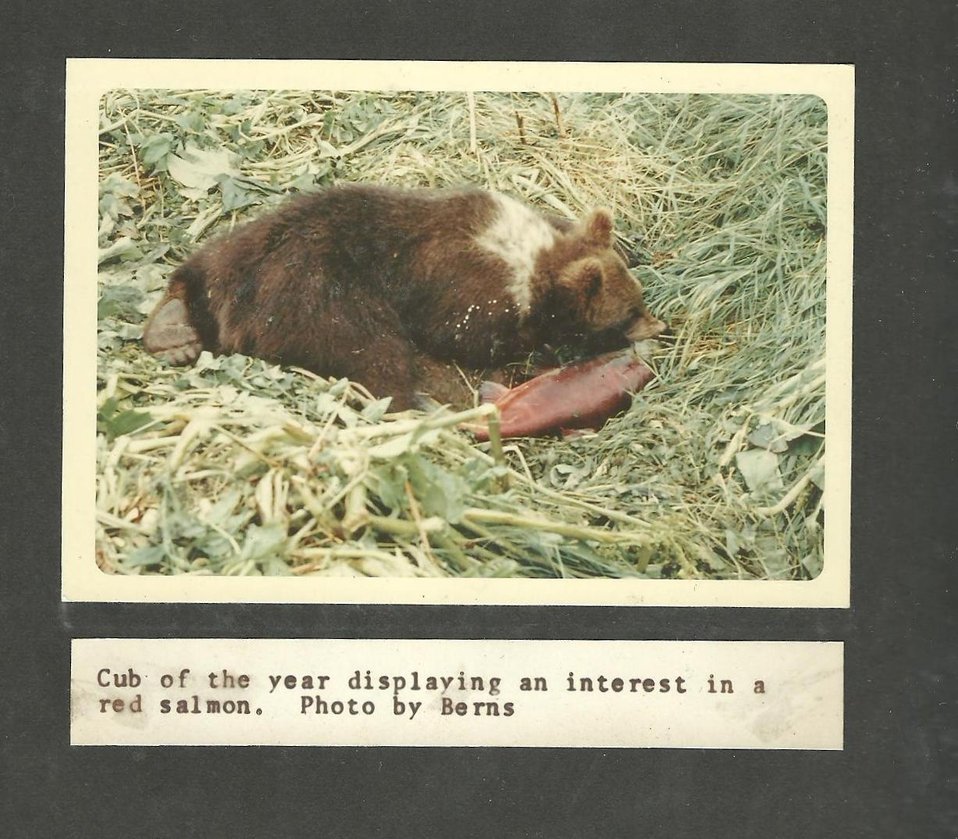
(1968) Cub of the Year

Credit: USFWS

Source and Contact: Kodiak National Wildlife Refuge